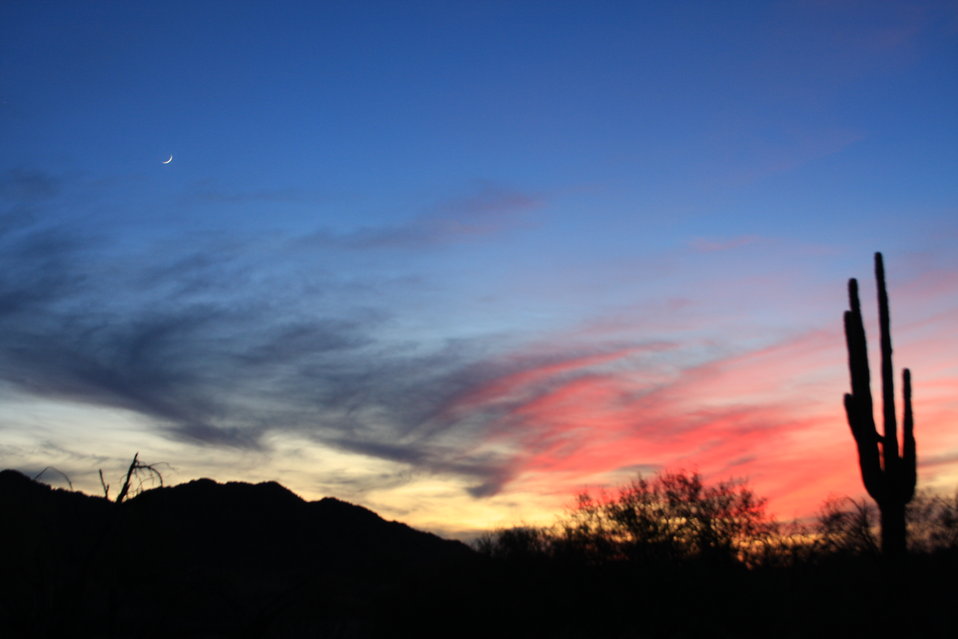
Desert Sunrise

Picture of an early morning sunrise at Cabeza Prieta NWR.